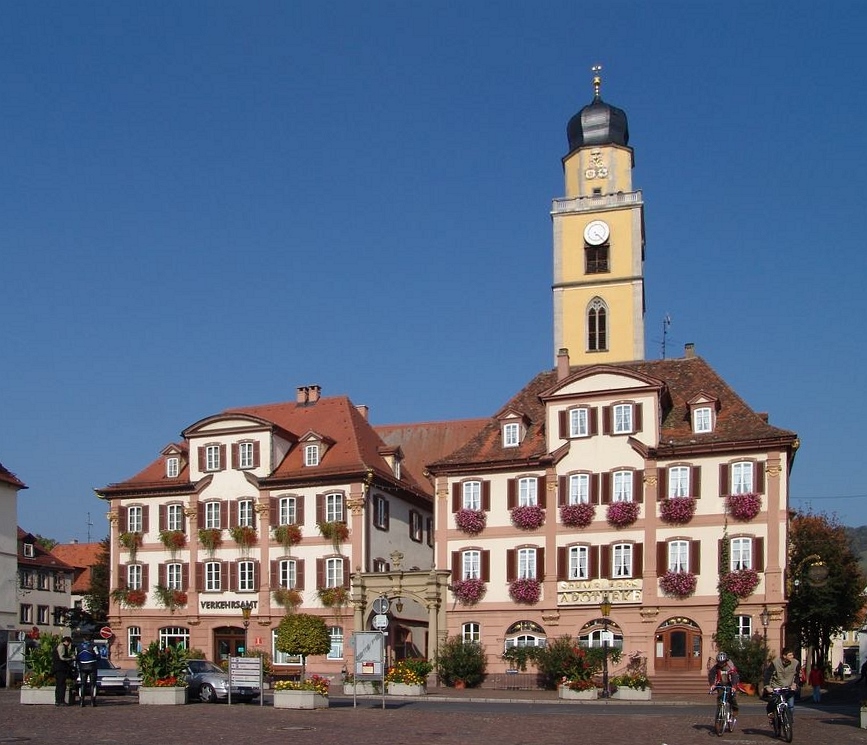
Deutsch: Zwillingshäuser am Marktplatz in Bad Mergentheim Twin houses at the market place in Bad Mergentheim, Germany